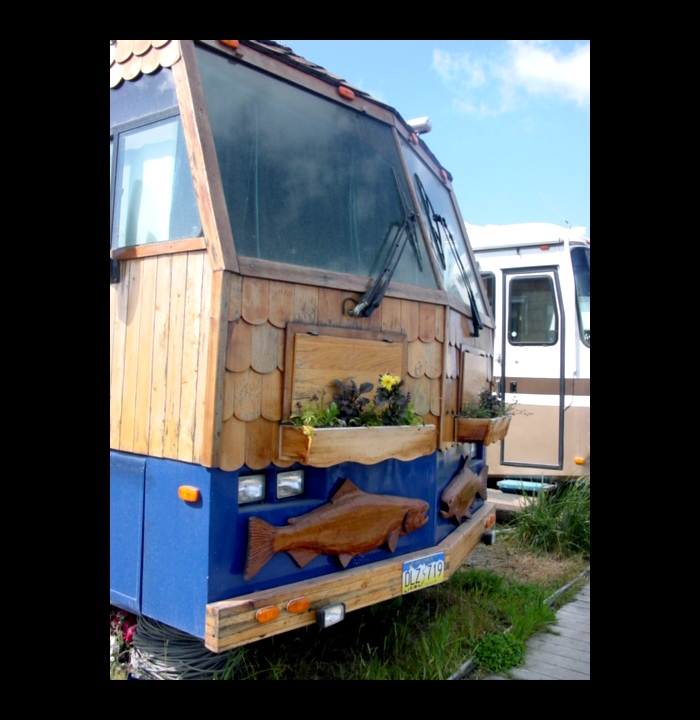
A motor home that has captured the spirit of coastal Alaska.